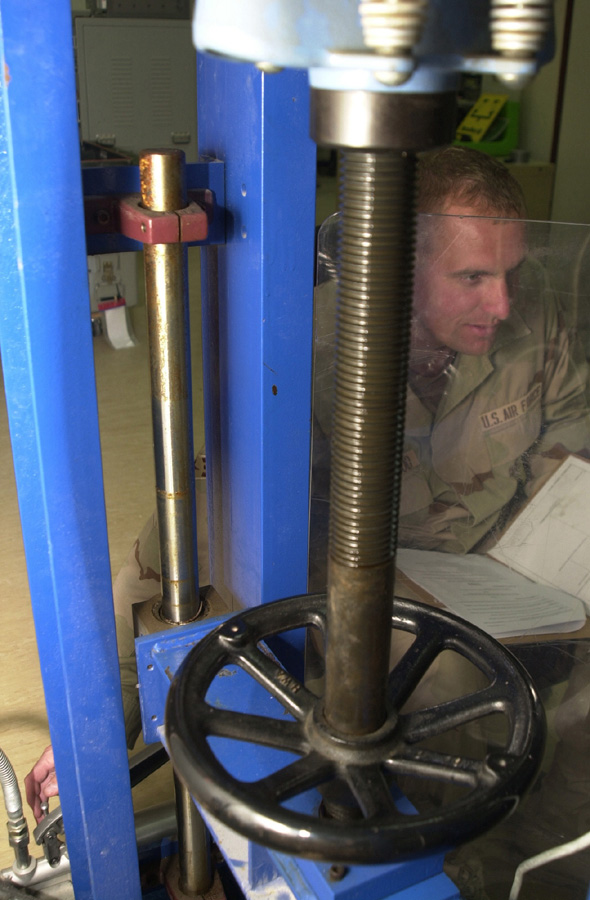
Practicing precision

SOUTHWEST ASIA -- Senior Airman Kent Greenwood applies pressure to a portable wheel load scale and a standard scale during calibration. A portable wheel load scale is commonly used to weigh cargo pallets. Airman Greenwood is a precision measurement equipment laboratory technician with the 379th Expeditionary Maintenance Squadron and is deployed from Shaw Air Force Base, S.C.